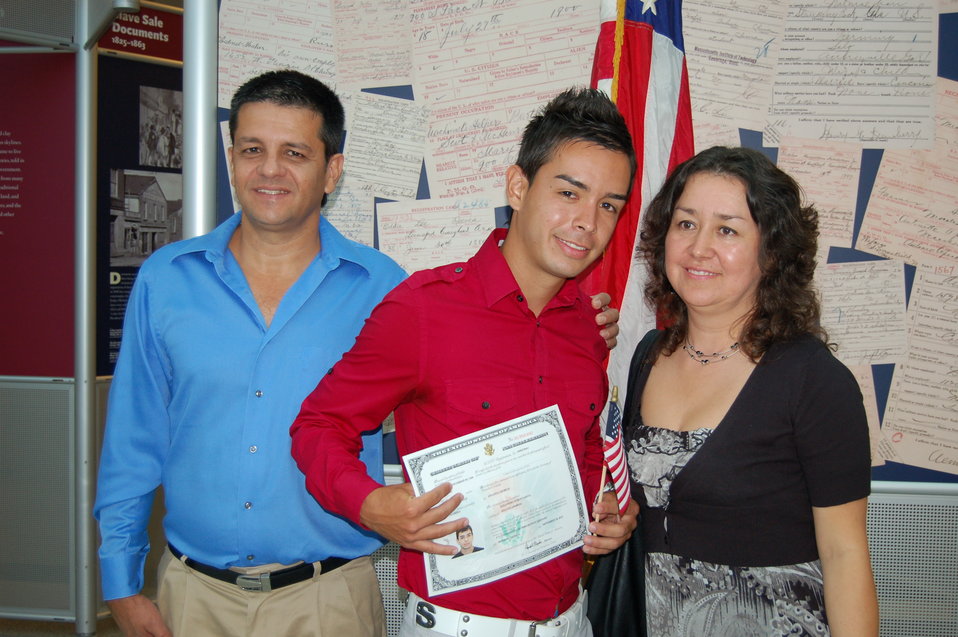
New Citizens